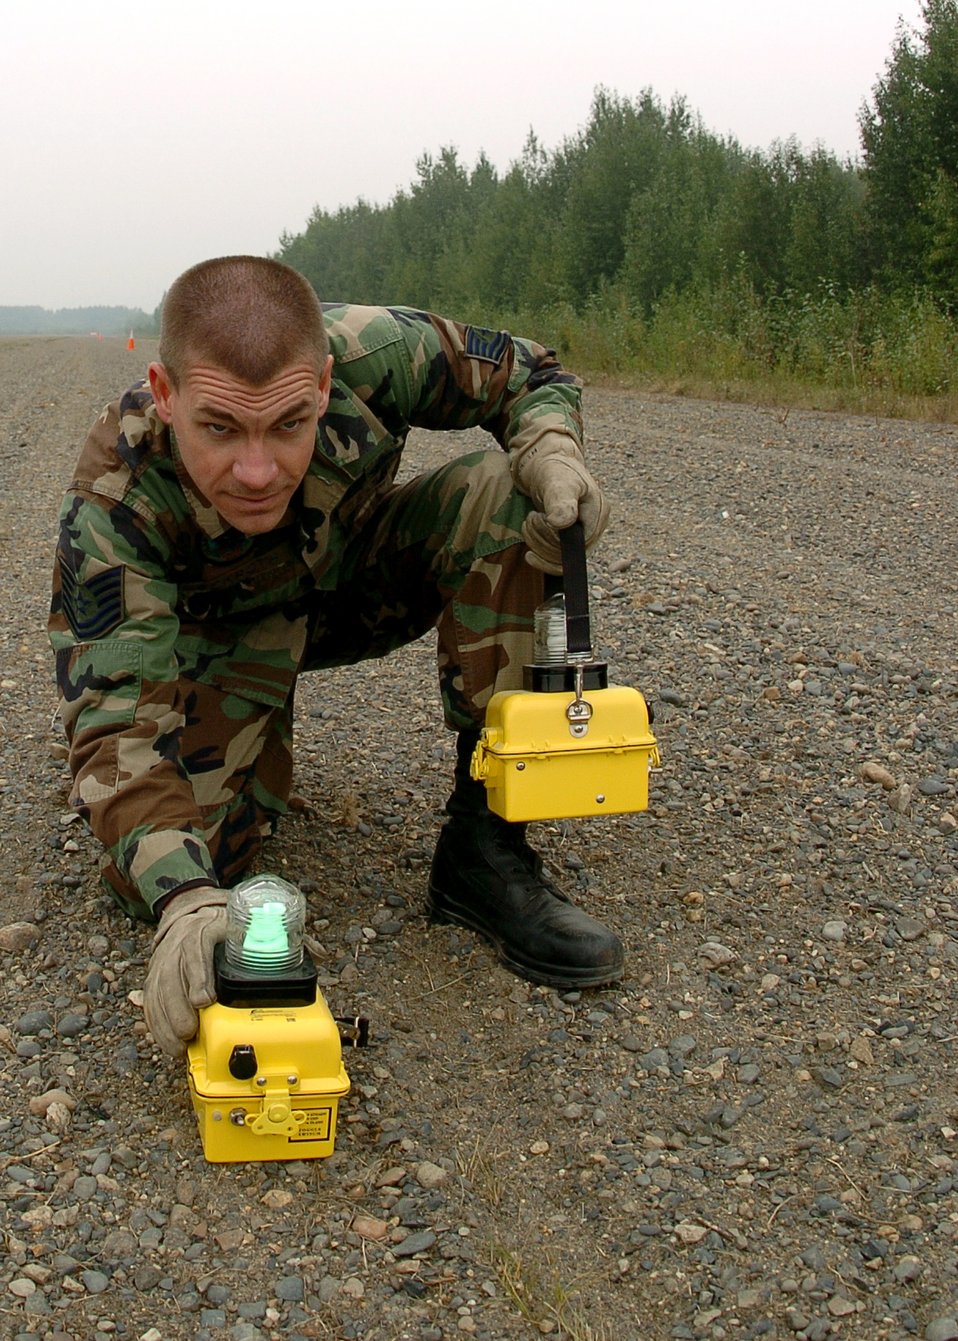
Civil Engineers help bring light in the night

RED DEVIL, Alaska -- Tech. Sgt. Greg Eckroth aligns a light during installation of a portable runway lighting system Aug. 17. The deployment of the system was part of the Alaska Shield/Northern Edge 05 exercise. The runway lights will allow air transportation to and from the remote landlocked village during nighttime. Sergeant Eckroth is assigned to the 611th Civil Engineer Squadron at Elmendorf Air Force Base, Alaska.